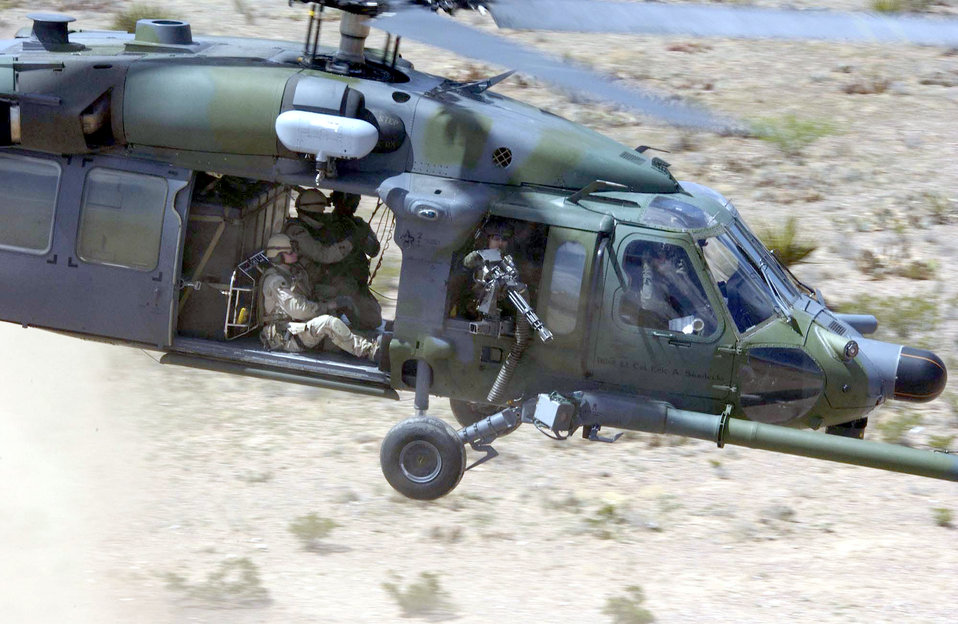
It's all live

FORT BLISS, Texas -- An HH-60G Pave Hawk makes an approach during a live-fire training exercise here April 9. The exercise was part of the 57th Wing Weapons School intensive five and one-half month training program. The HH-60 is assigned to the 66th Rescue Squadron at Nellis Air Force Base, Nev.